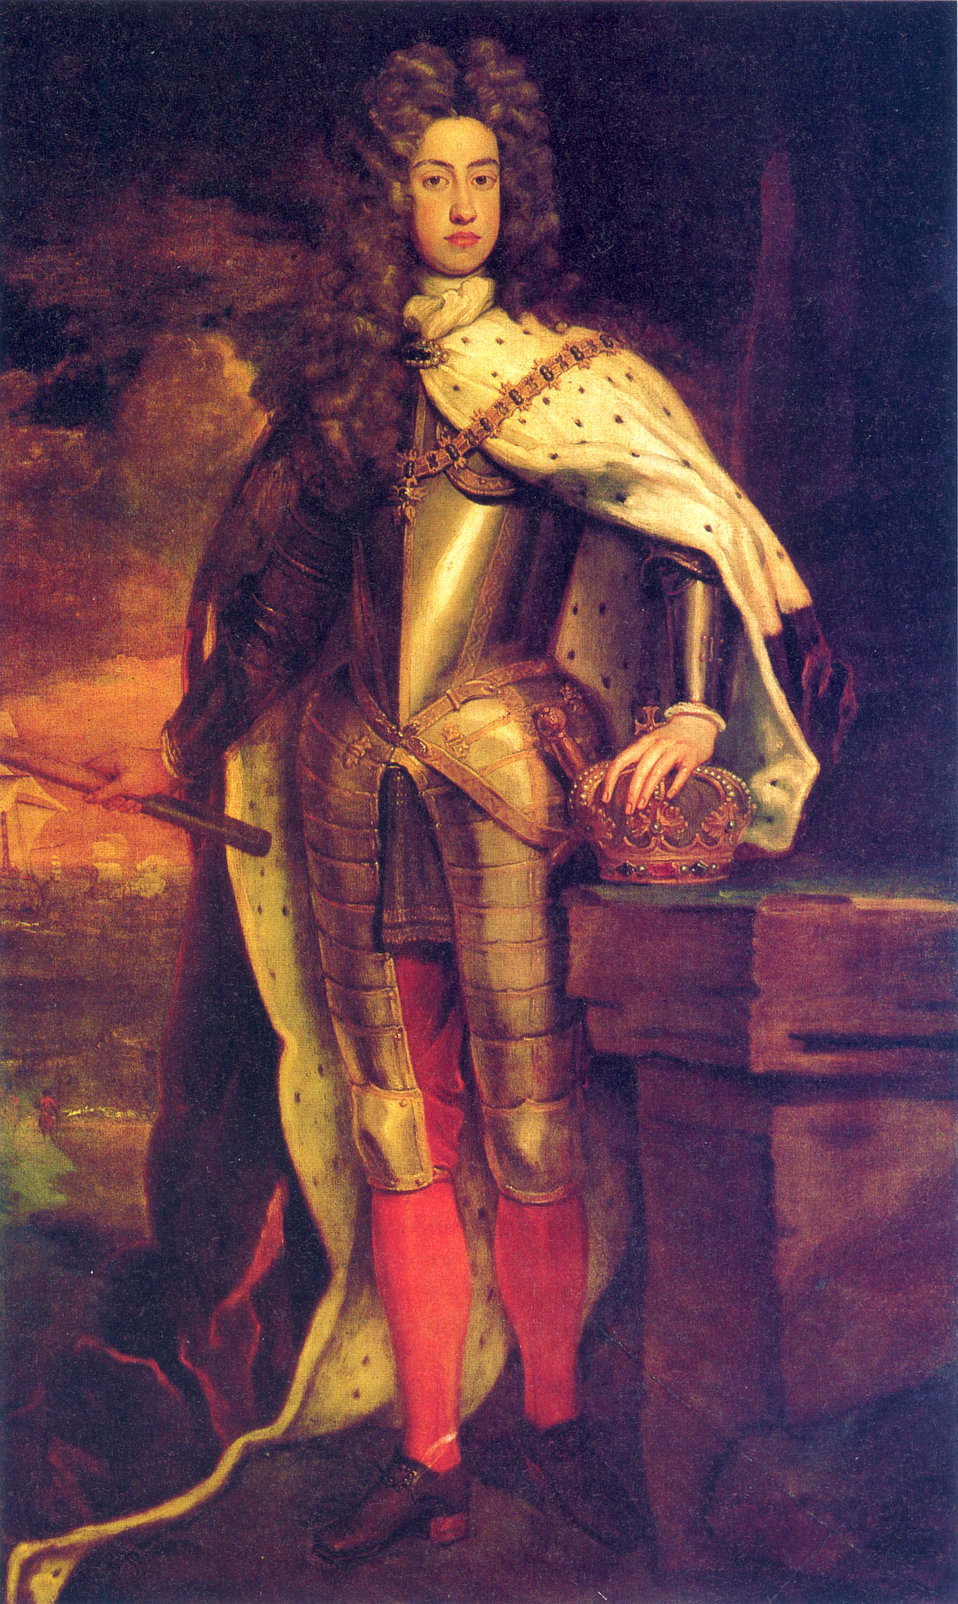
KarlVICarrenodeMiranda1673